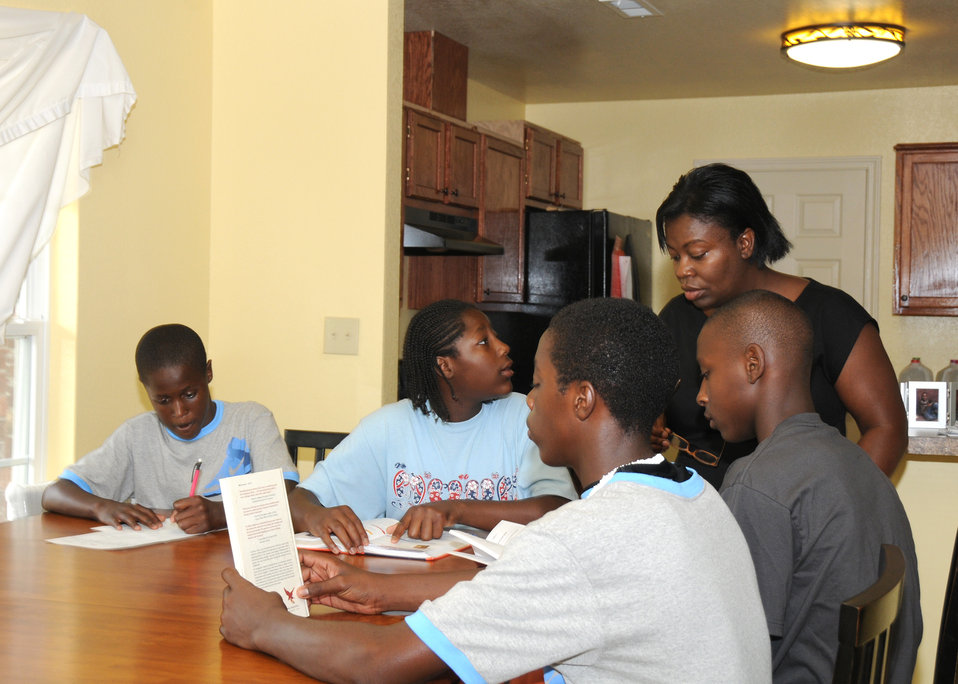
Mrs. Davis n the kitchen of her new home with (L TO R) nephew,Knighe Rhoder, niece Carleihga Thompson, Mrs. Davis son Harious, and nephew Mark Carter, in Fort Coffee, Oklahoma.